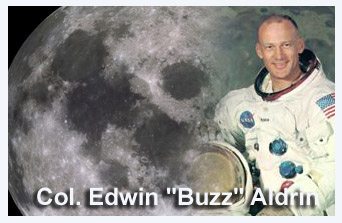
Col. Edwin

Col. Buzz Aldrin was the second person to walk on the moon July 20, 1969. He was the lunar module pilot who followed in the footsteps of Neil Armstrong's historic